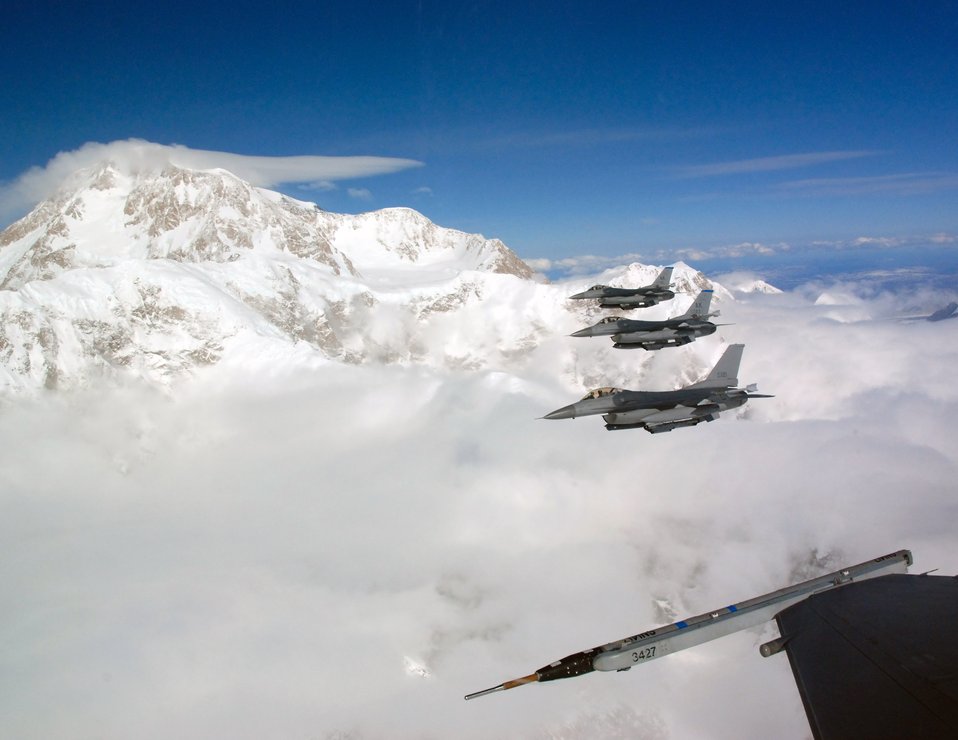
Show of force

F-16 Fighting Falcons fly in formation April 25 over the Pacific Alaska Range Complex. The F-16s are from the 18th Fighter Squadron at Eielson Air Force Base, Alaska. Members of the 18th FS conduct air operations for combat-ready F-16s, working closely with the 355th Fighter Squadron to provide close-air support, forward-air control (airborne), battlefield air interdiction, and offensive counter air.